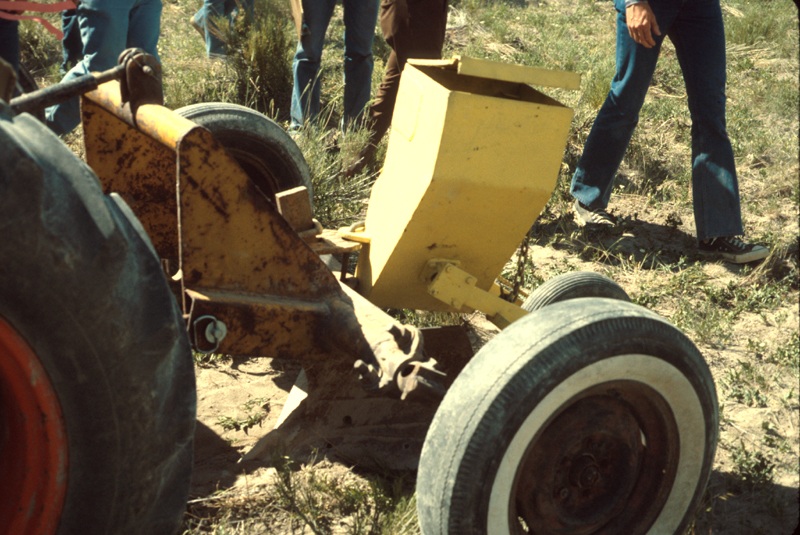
Bitterbrush Seedlings Medusa Head Range Restoration Project Lower Snake River District